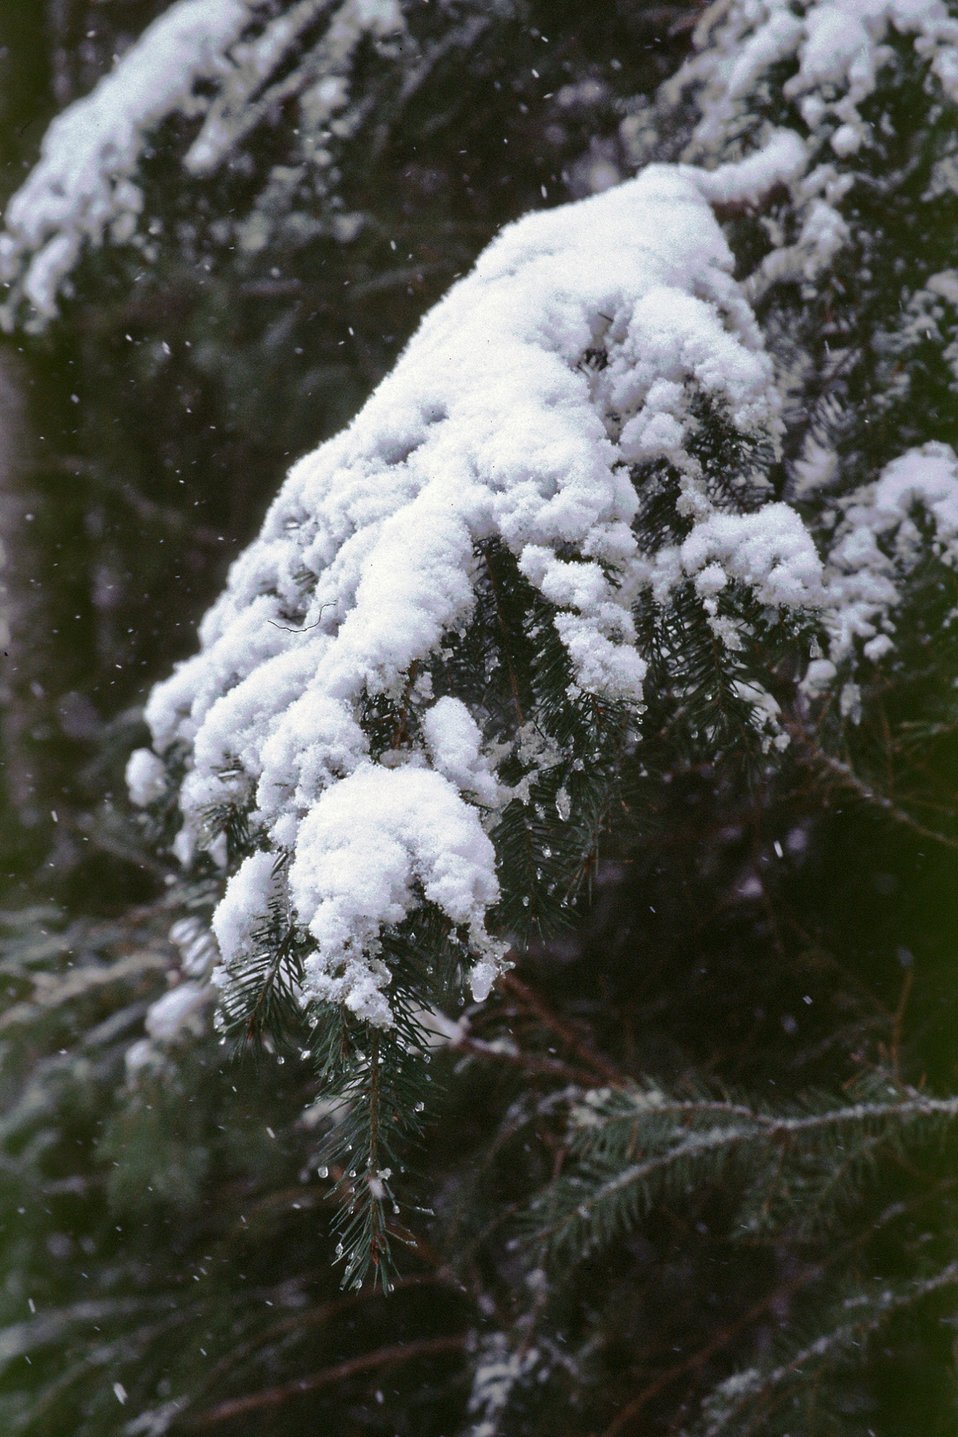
Mid Winter forest scene in the Mollala Corridor.